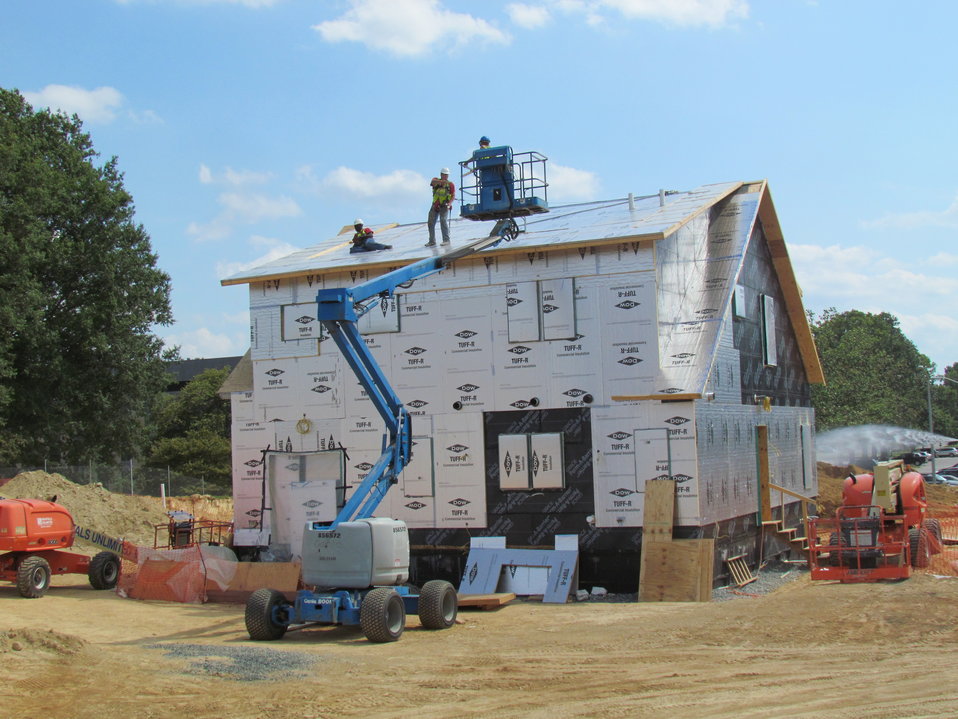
Net-Zero Energy Residential Test Facility - Photo showing workman instlling foil-faced insulation on roof of facility.